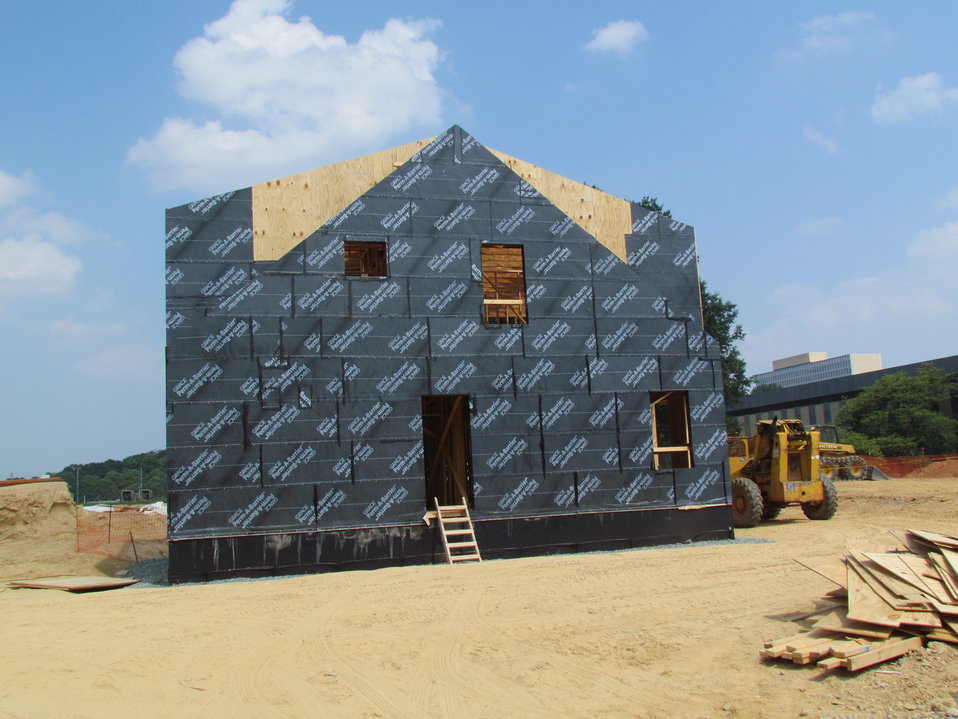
Net-Zero Energy Residential Test Facility - Completion of installation of air/moisture barrier on west side of facility.